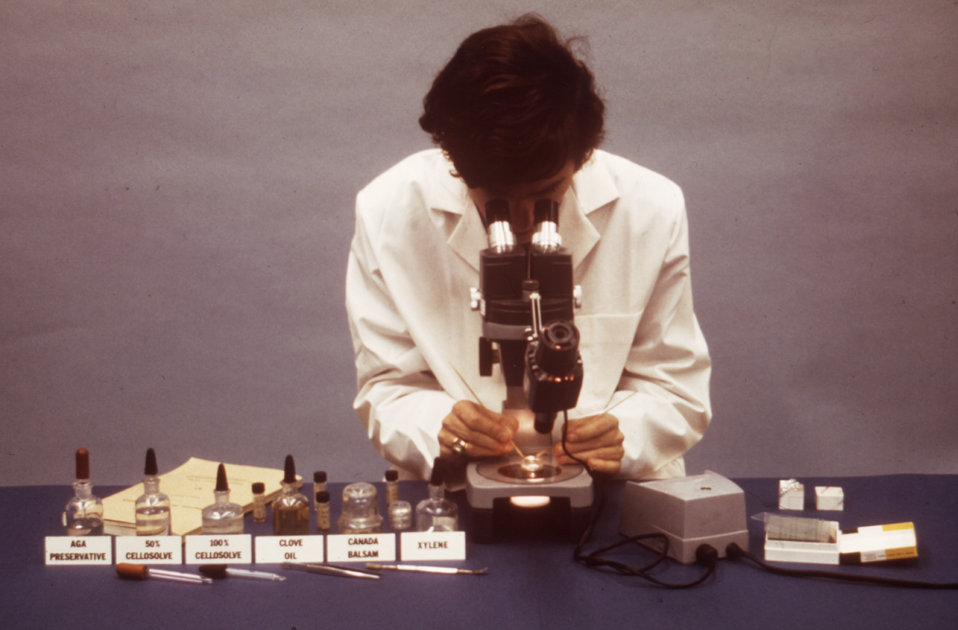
Here CDC laboratorian, David Lanty, is shown mounting insect specimens on microscope slides.